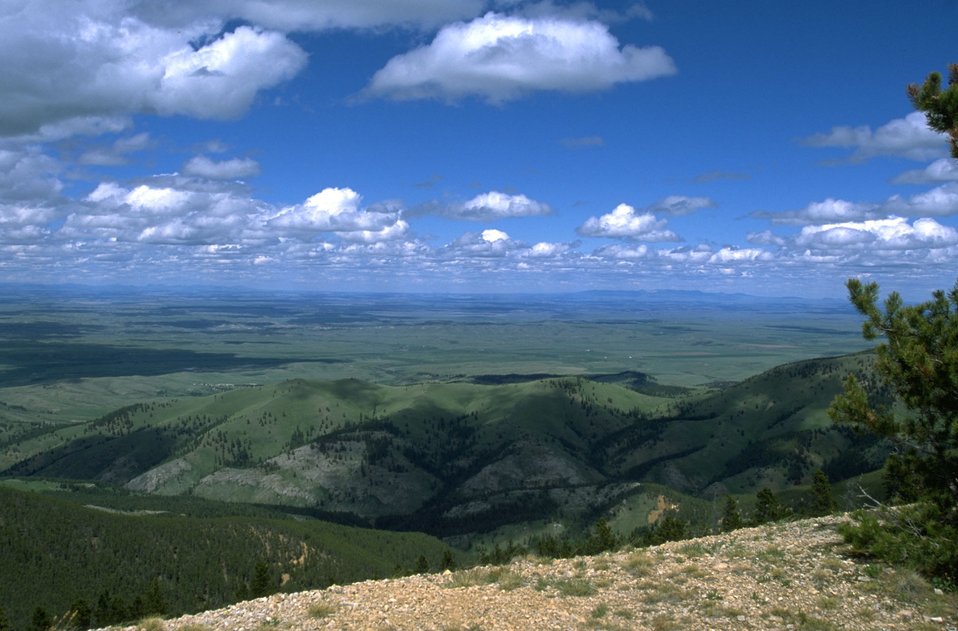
Judith Mountains area